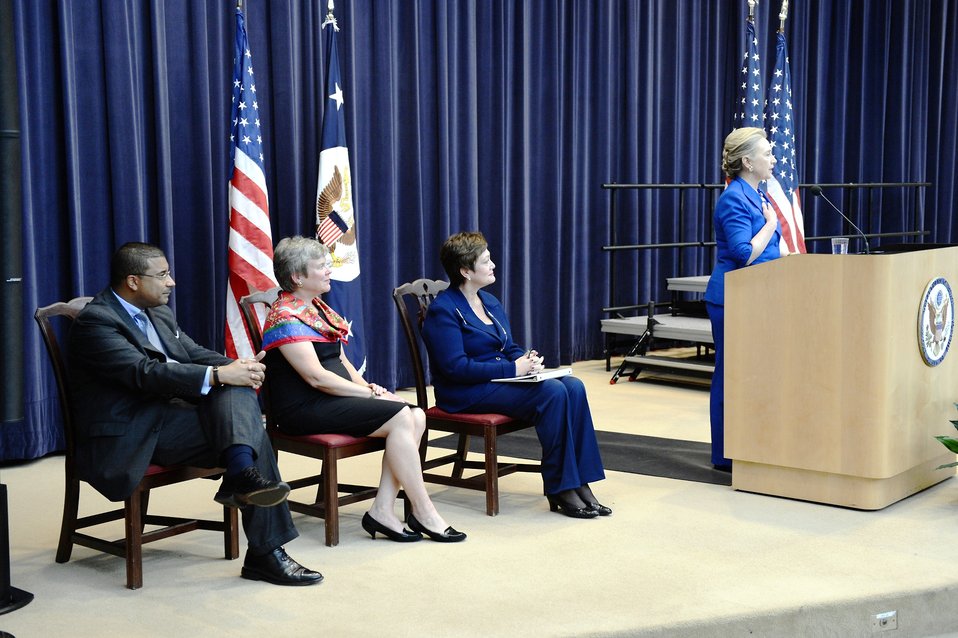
Secretary Clinton Delivers Remarks Honoring the EPAA Negotiations Delegation and Key Contributors Across the U.S. Government Interagency

U.S. Secretary of State Hillary Rodham Clinton delivers remarks honoring the European Phased Adaptive Approach (EPAA) Negotiations Delegation and Key Contributors across the U.S. Government interagency at the U.S. Department of State in Washington, D.C., October 2012. Seated in the photo, left to right, are Deputy Assistant Secretary of State for Space and Defense Policy Frank Rose, Acting Under Secretary of State for Arms Control and International Security Rose Gottemoeller, and Former Under Secretary of State for Arms Control and International Security Ellen Tauscher.